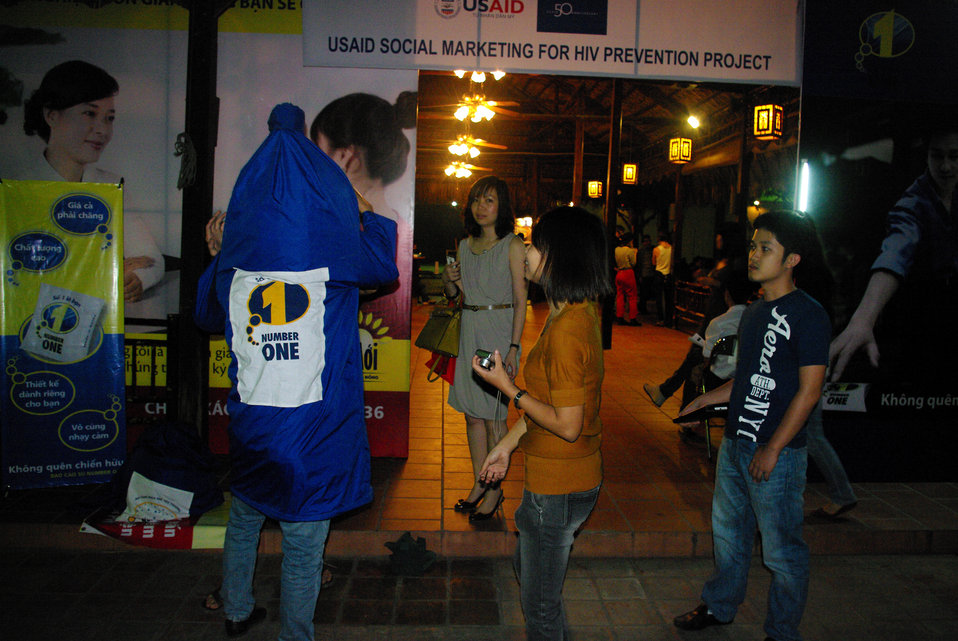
PEPFAR, U.S. Embassy Host Dengue Fever Concert in Hanoi

Dengue Fever exhibit